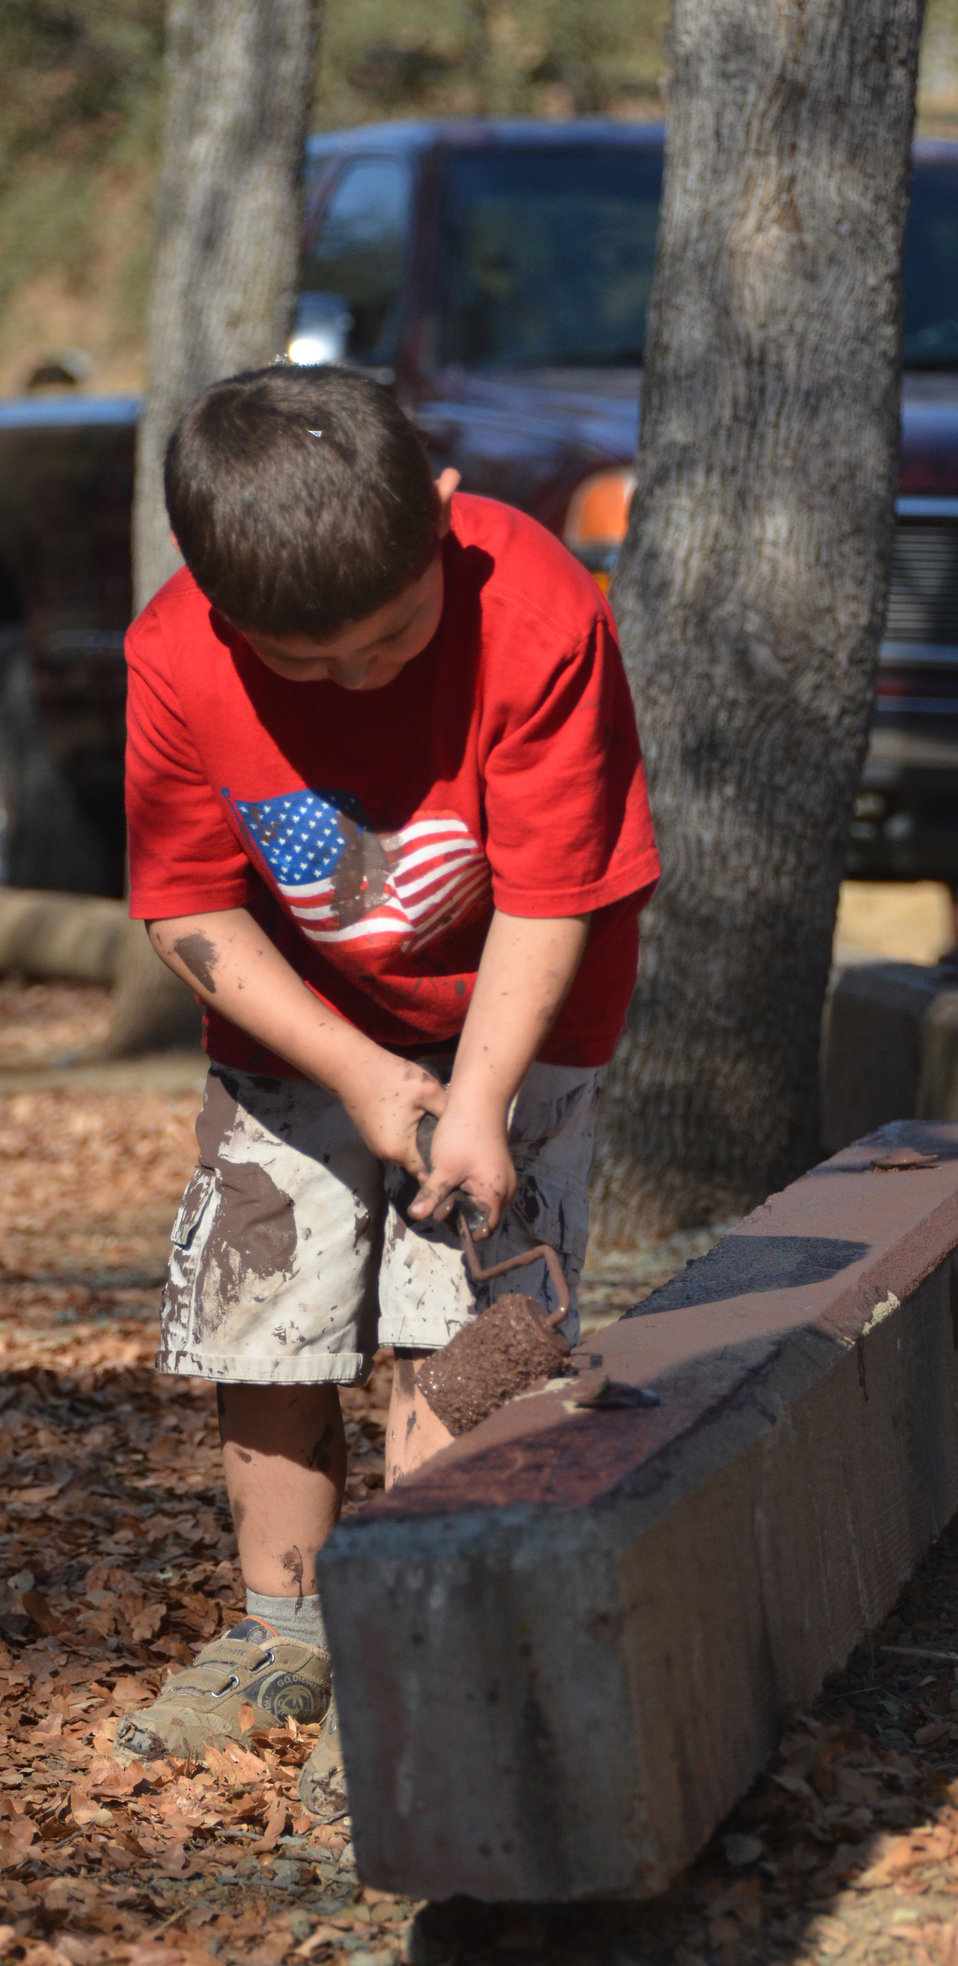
Patriotic painter (National Public Lands Day 2012)

A young volunteer helps spruce up a parking area at New Hogan Lake and adds some color of his own during National Public Lands Day, Sept. 29, 2012. U.S. Army Corps of Engineers park staff and an army of volunteers celebrated the day with park improvement projects, camaraderie and food.